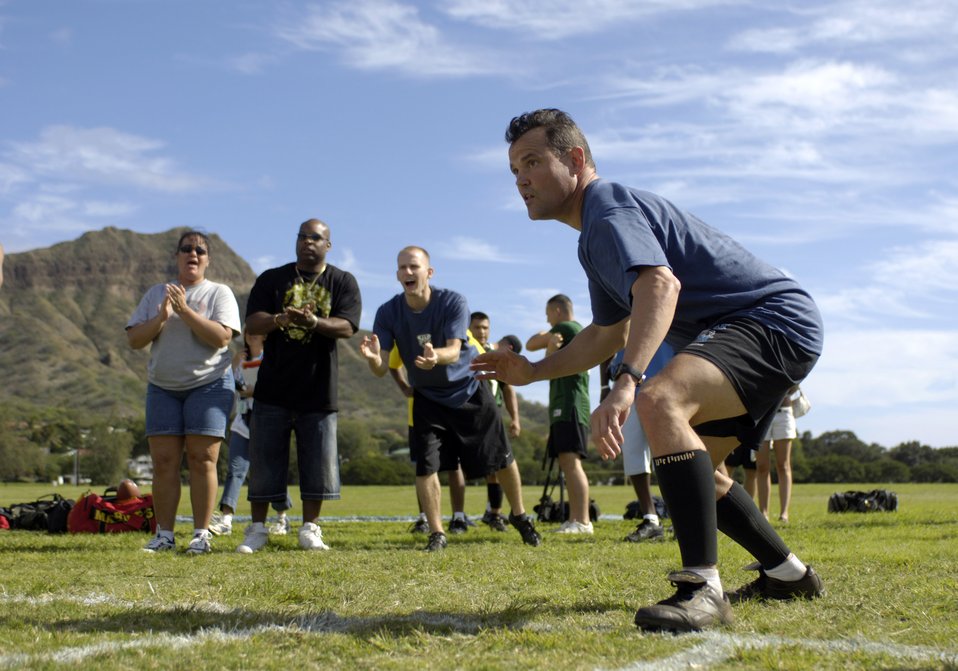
NFL Military Challenge

KAPIOLANI PARK, Hawaii (AFPN) -- Claude Jennings waits his turn in the 40-yard dash. Jennings is part of a six-person Air Force team that won the National Football League Military Challenge. Each service competed in punt, pass, snapping and kicking competitions.